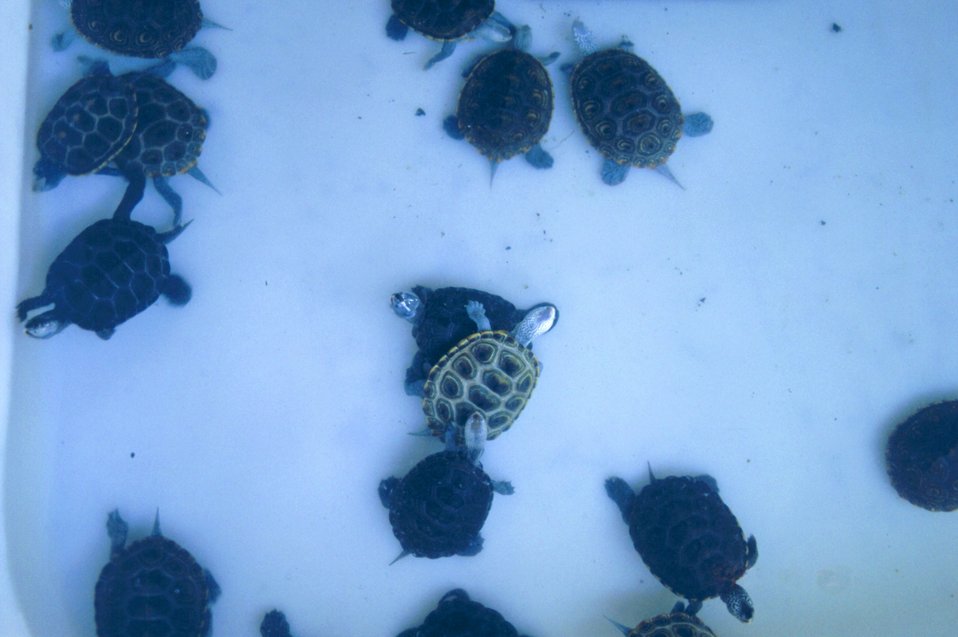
Maryland terrapins being raised as part of a conservation effort.